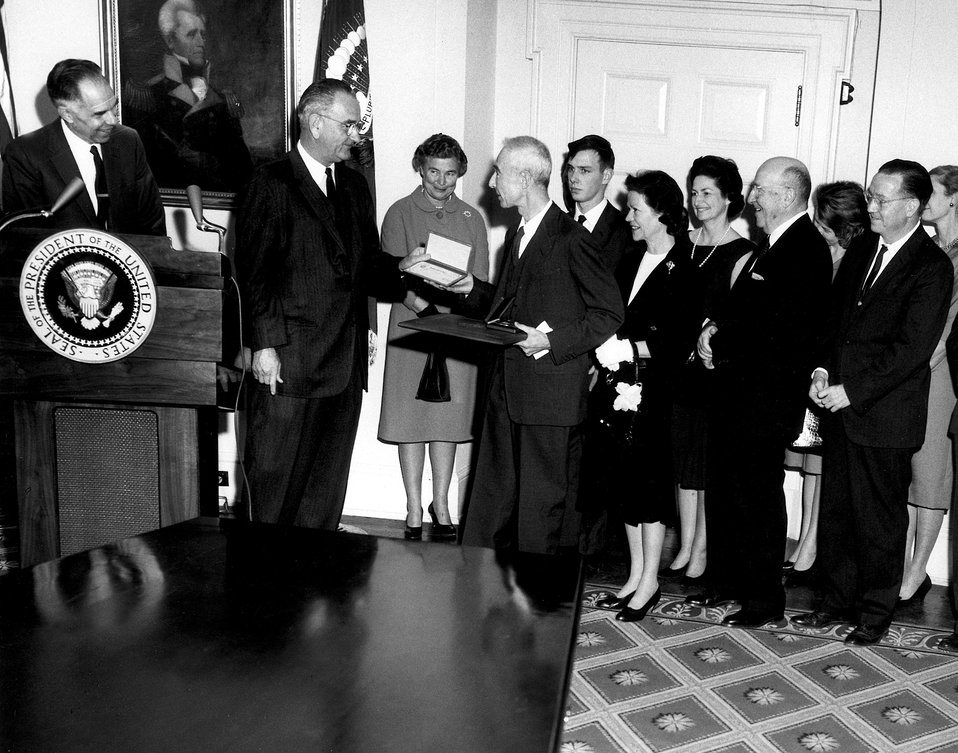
Fermi Award, Oppenheimer, 1963.